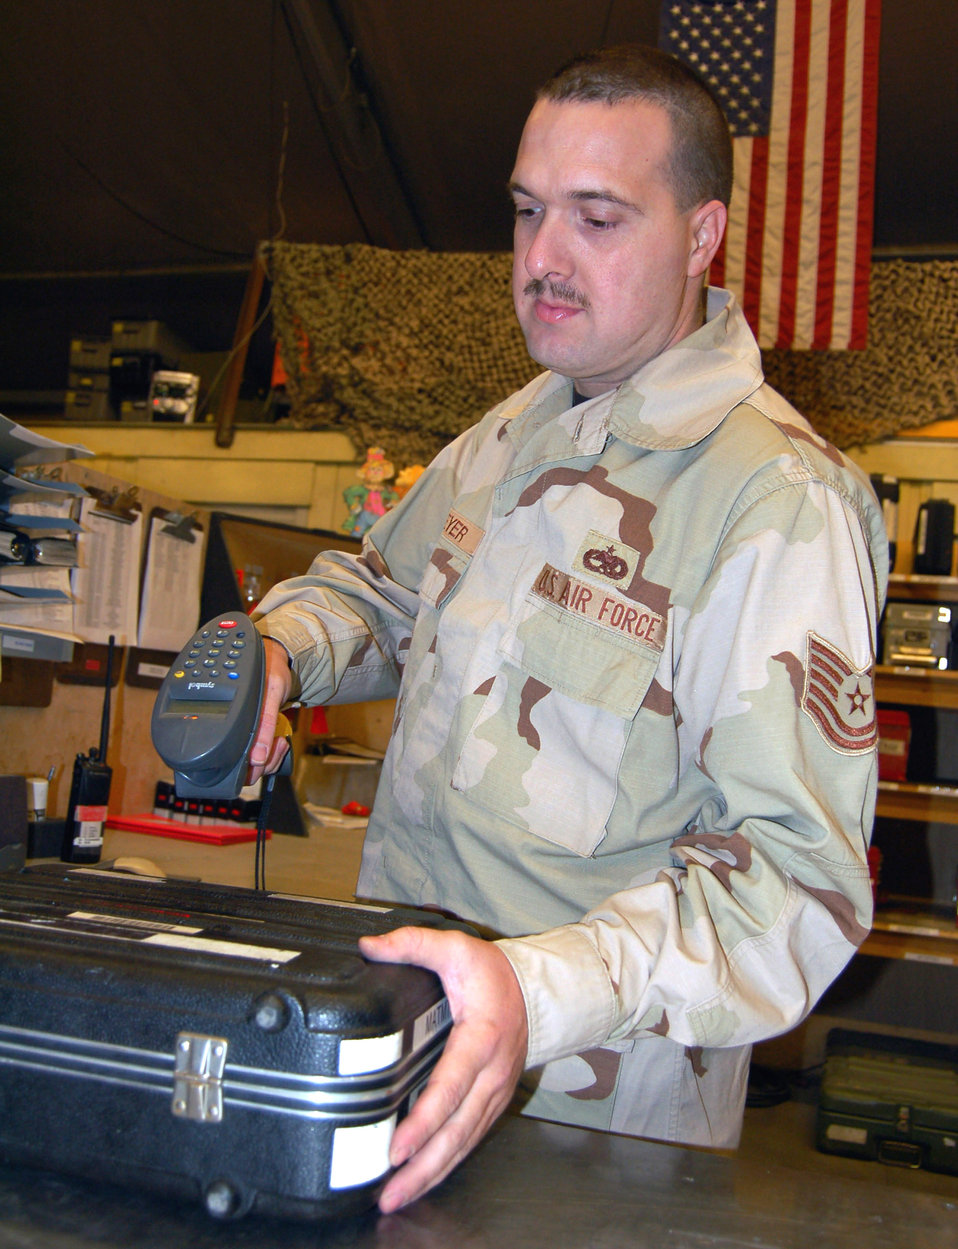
Maintenance unit moves fuel on time

Tech. Sgt. Scott Meyer scans a kit to be used by the maintainers on the flightline. This scanning system helps the maintainers keep tool accountability and saves processing time. Sergeant Meyer is the KC-135 Aircraft Maintenance Unit support section NCO in charge and is deployed from the 92nd Aircraft Maintenance Squadron, Fairchild Air Force Base, Wash.